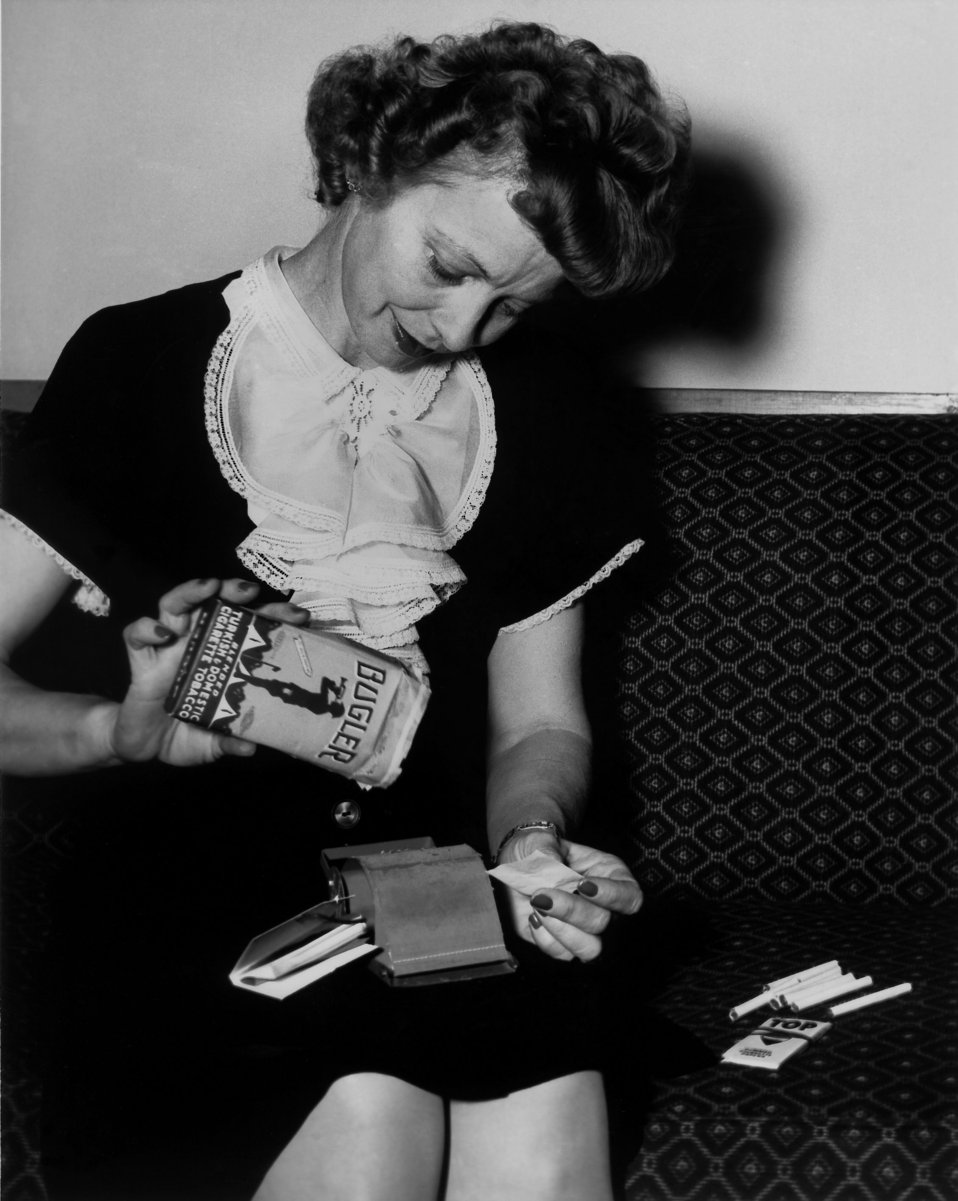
Rolling Her Own Cigarettes Oak Ridge

Pro 294 DOE photo by Ed Westcott 2/15/45
Oak Ridge Tennessee